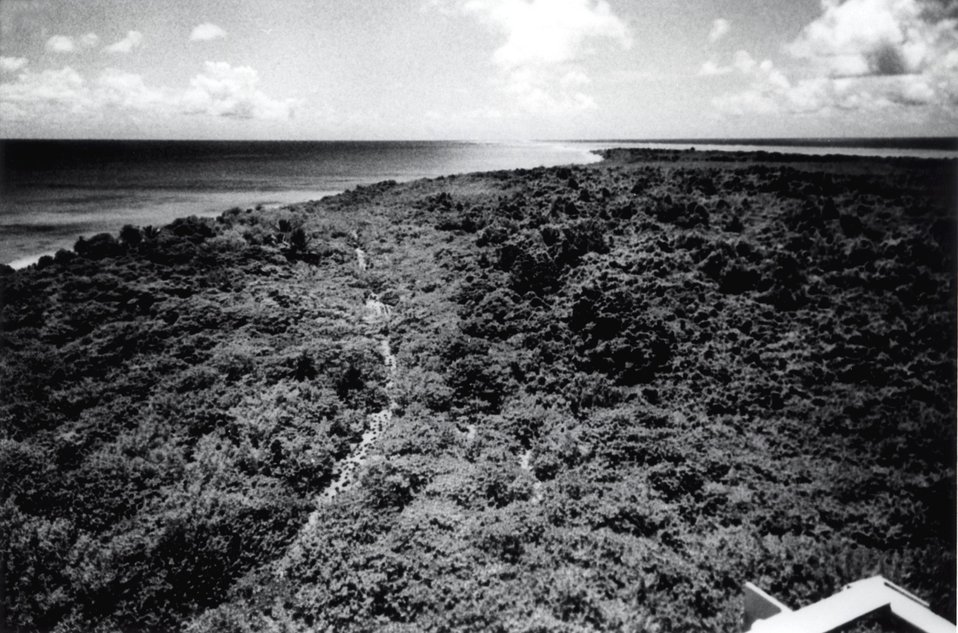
Scientists check the condition of the Bikini islands six years after the last nuclear test took place there.